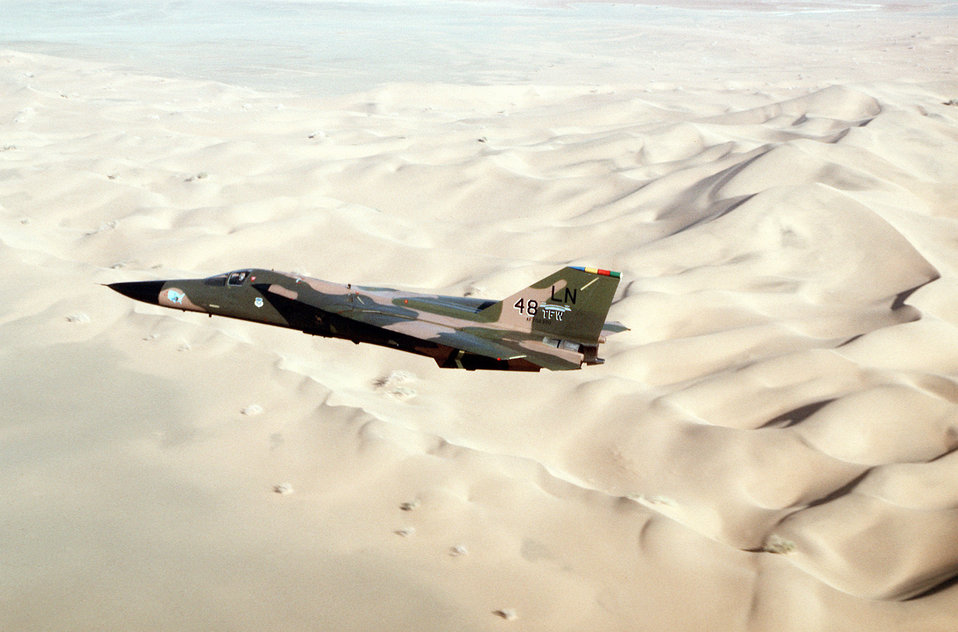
F-111F

1990's -- An F-111F aircraft of the 48th Tactical Fighter Wing flies over the desert during Operation Desert Shield.